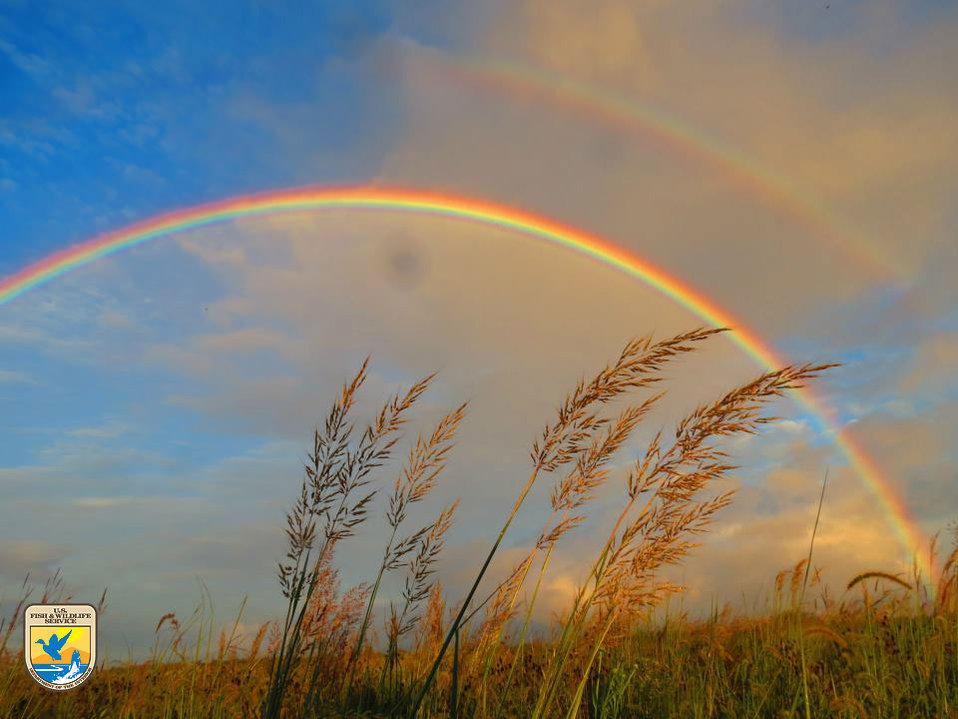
Double Rainbow - Midwest Region

Indian grass and a double rainbow at Port Louisa National Wildlife Refuge